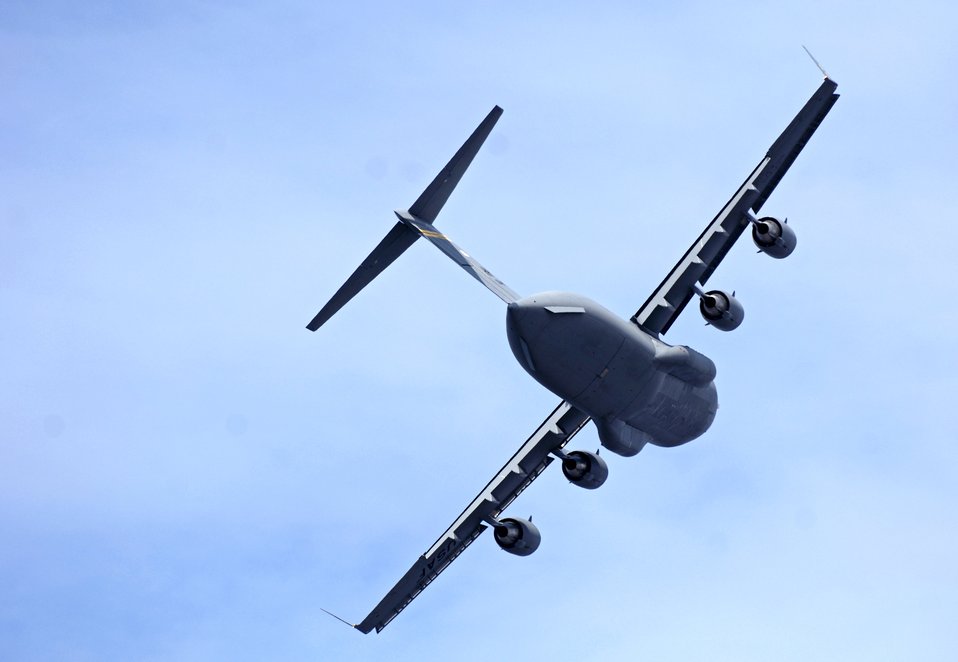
Air show to showcase C-17's capabilities

A C-17 Globemaster III practices aerial maneuvers Sept. 27 over Kona International Airport in Hawaii to prepare for an upcoming air show. The C-17 is from the 535th Airlift Squadron based at Hickam Air Force Base, Hawaii.